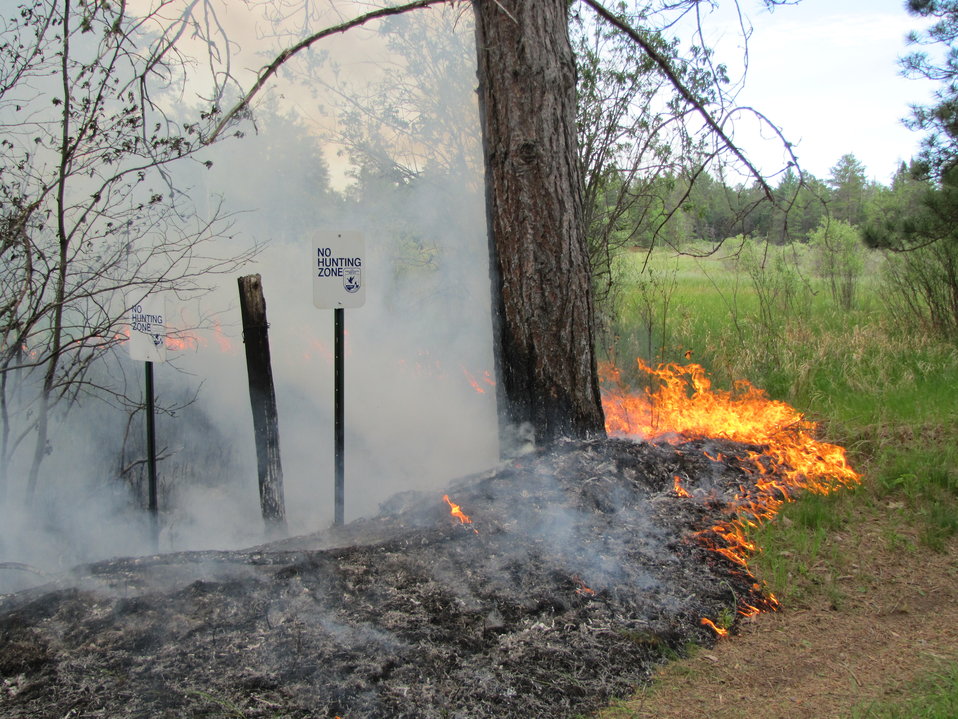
The Back Fire

Lighting a back fire off Pine Creek Road to keep the main fire contained.